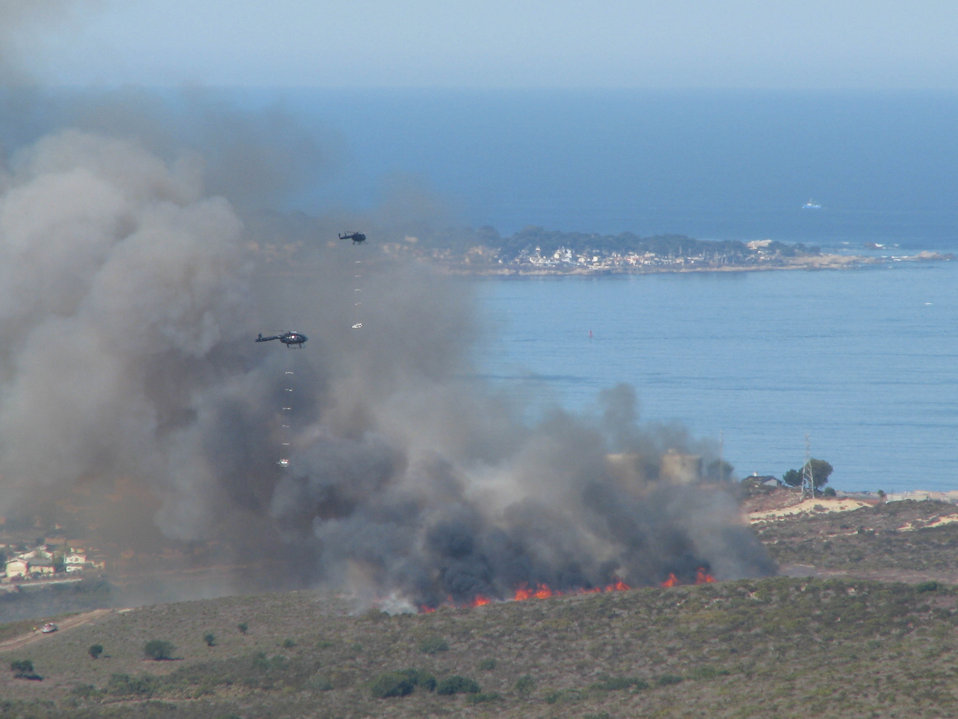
Chaparral clearing at Fort Ord Oct. 15

The U.S. Army Corps of Engineers Sacramento District conducted a controlled burn of central marine chaparral at Fort Ord, Calif., Oct. 15, to expose unexploded ordnance at the formerly utilized defense site. The burn, carefully coordinated with local agencies, lasted less than two hours and was timed so that prevailing winds would help blow the smoke away from population centers. The controlled burns are part of a comprehensive ordnance removal program at Fort Ord, which closed in 1994 under recommendation from the Base Realignment and Closure Commission.